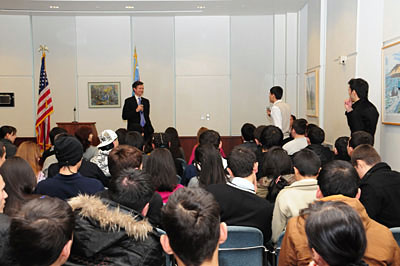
Assistant Secretary Blake Takes a Question

U.S. Assistant Secretary of State for South and Central Asian Affairs Robert O. Blake takes a question from an audience member at the Chai Chat with local Uzbek youth at U.S. Embassy Tashkent, Uzbekistan, during his visit, February 17-18, 2011.